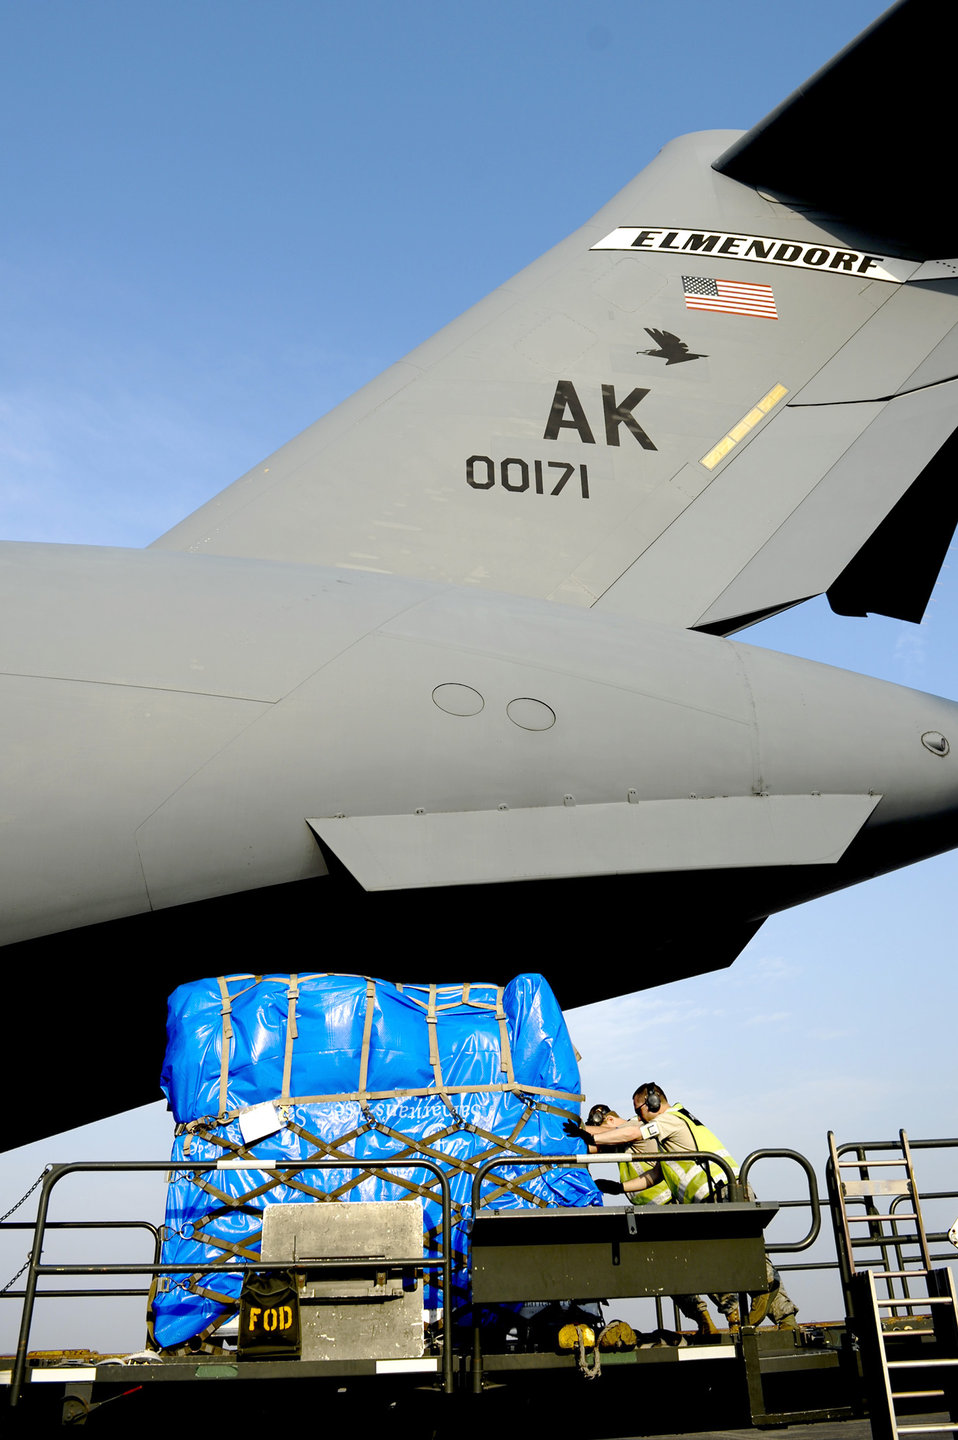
Supplies continue to roll into Sendai

Staff Sgt. Jason Doyle and Senior Airman Joshua Buckner move supplies onto a C-17 Globemaster III March 20, 2011, at Yokota Air Base, Japan. The supplies were transported to Sendai Airport to be used for humanitarian assistance bringing relief to Japan after the earthquake and tsunami disaster. Doyle and Buckner are assigned to the 730th Air Mobility Squadron.